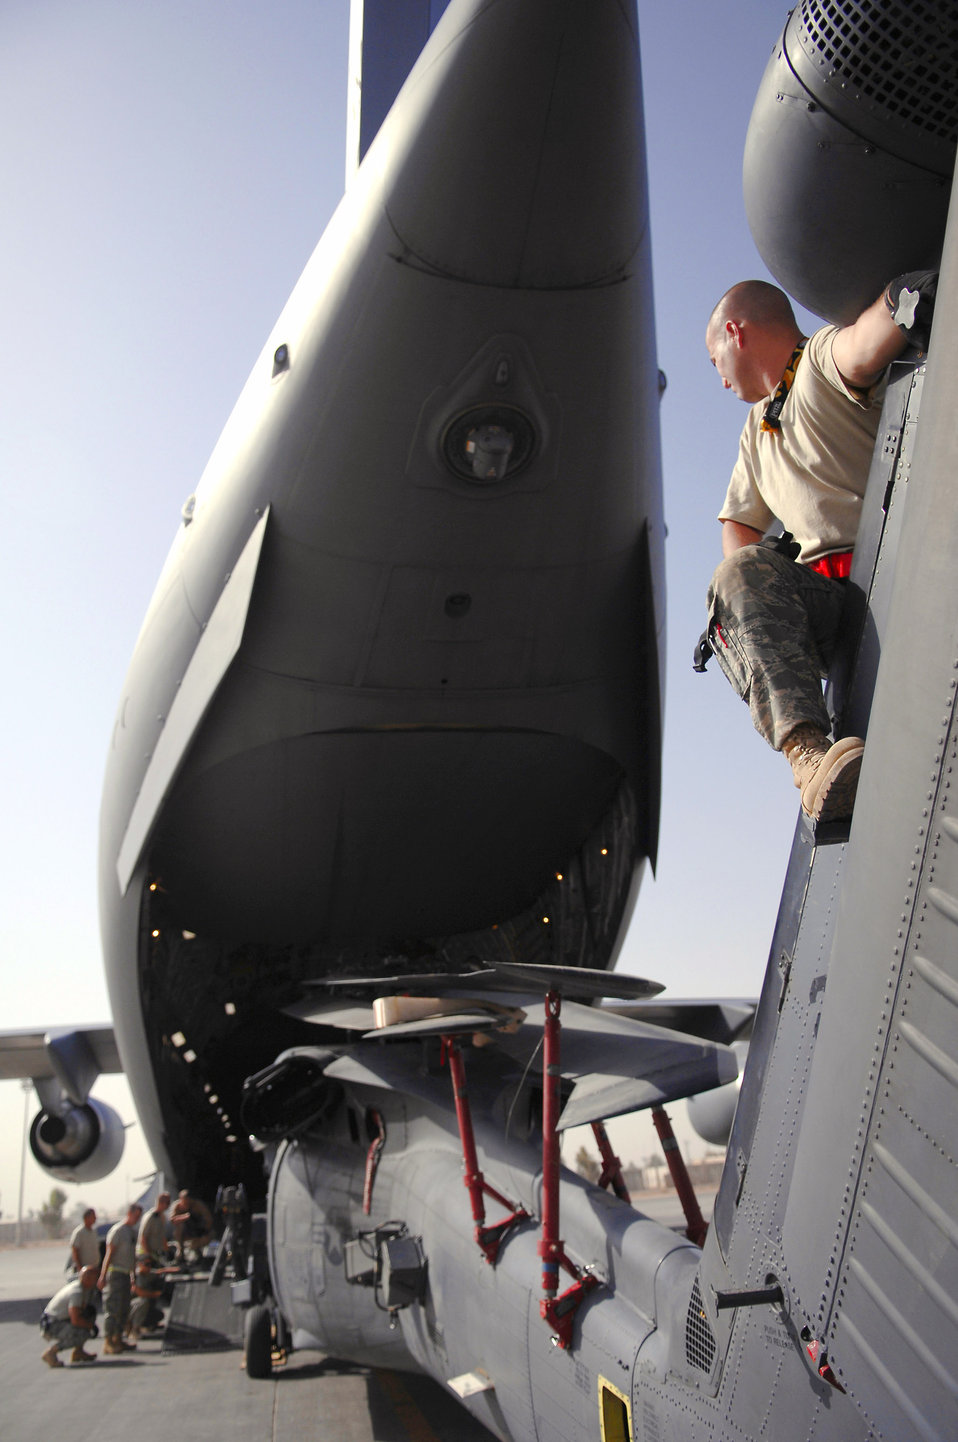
How to put a square peg in a round hole

Staff Sgt. Joshua Sallander sits on the tail rotor of an HH-60 Pave Hawk while it's loaded onto a C-17 Globemaster III July 12 at Joint Base Balad, Iraq. Positioning several Airmen around and on the helicopter ensures it will not make contact with the aircraft and cause damage. The HH-60 is in a folded configuration to better fit into the C-17. Sergeant Sallander is a 64th Expeditionary Helicopter Maintenance Unit crew chief deployed from Davis-Monthan Air Force Base, Ariz.